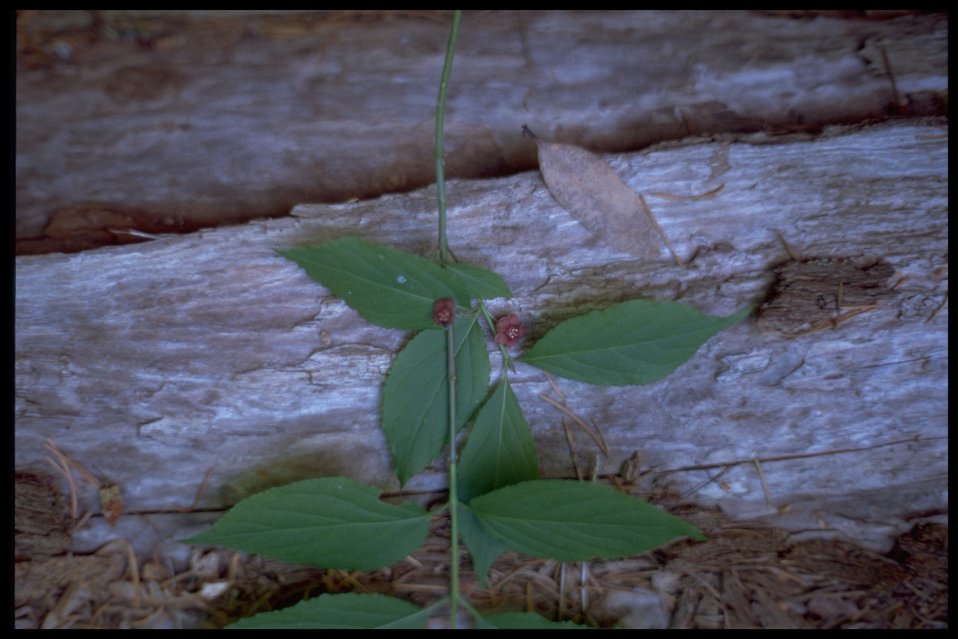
Medium shot of Western wahoo (Eunonymus occidentalis).